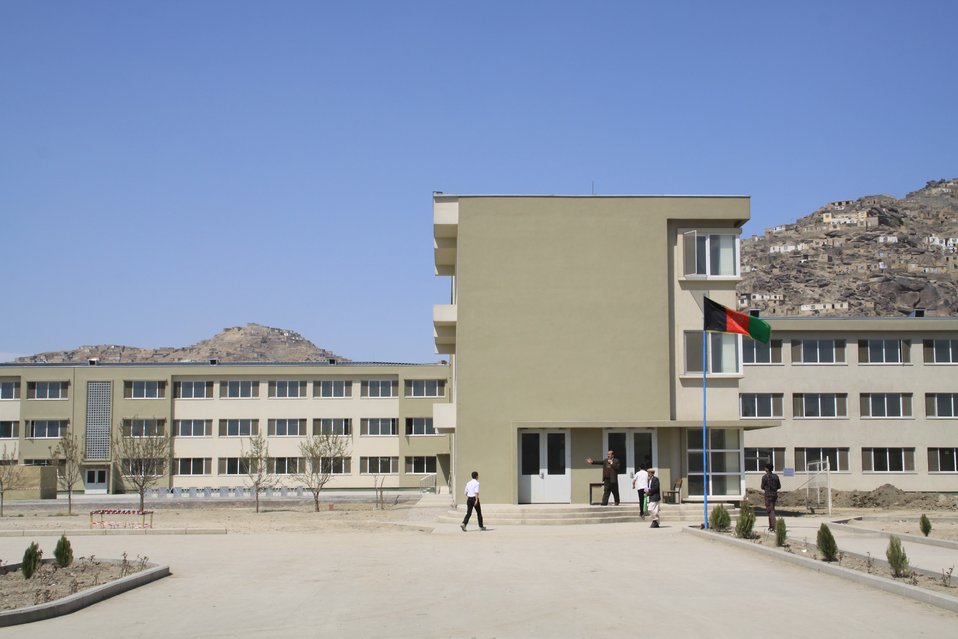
Ghazi high school , Kabul

Ghazi high school includes 72 classrooms